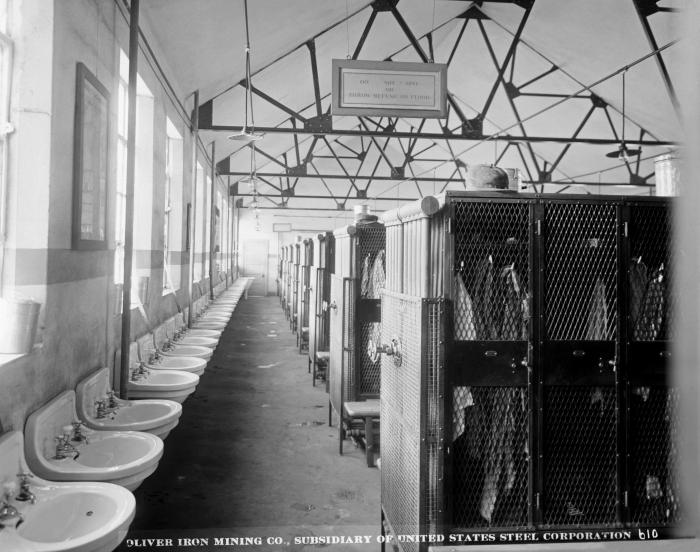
This 1915 historic photograph showed the toilet facilities, and employee lockers at the Oliver Mining Company facility at the Sibley Mine located near Ely, Minnesota.